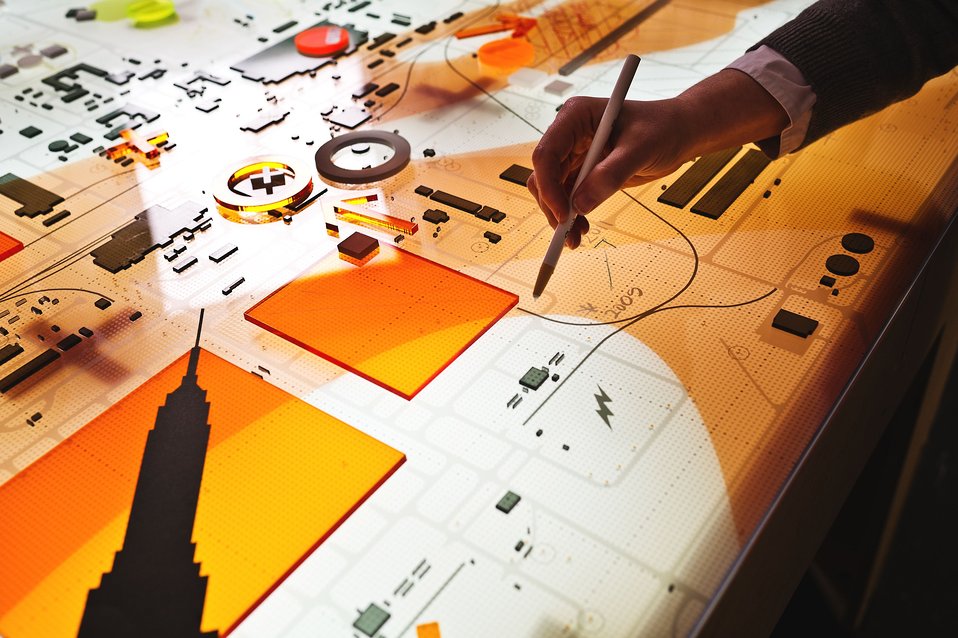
UK Students Imagine DOE’s Paducah Site As Future Technical-Industrial Hub

This Paducah Site model’s interactive planning tool has features above and below the ground surface. The model includes icons and markers that can be used like game pieces, and it can be written on and easily erased.

Over the past year, University of Kentucky students have studied how to preserve, replace, or even build on the more than 3,000 direct and indirect jobs the site currently supports. Future success hinges on interrelated uses such as research and development, education, energy production, manufacturing, and recycling/reclamation, he said.